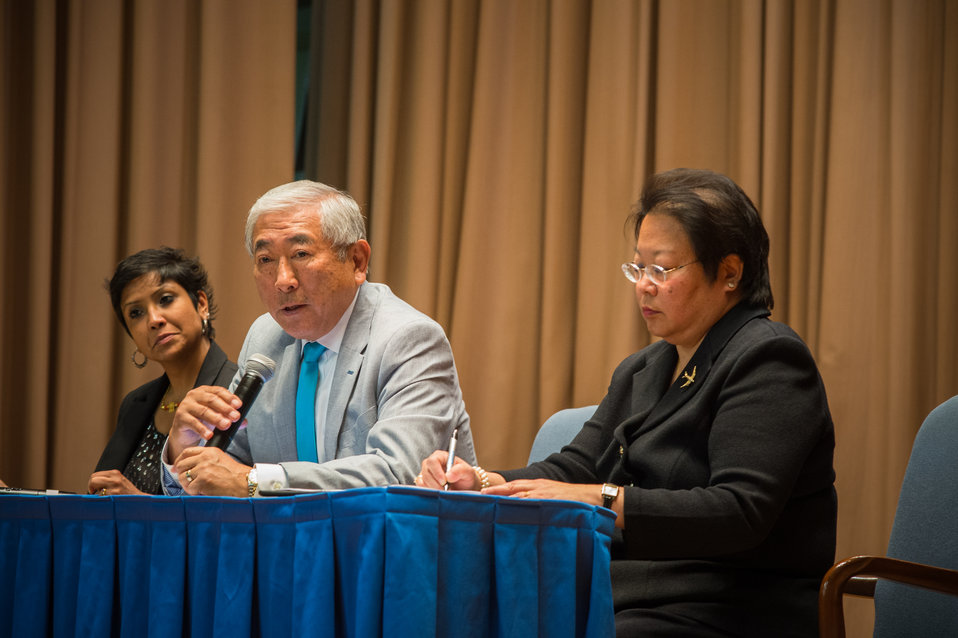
Floyd Mori, President and CEO, Asian Pacific American Institute for Congressional Studies (APAICS) participates in a panel discussion on civil rights and leadership U.S. Department of Agriculture (USDA) in Washington, D.C. on Thursday, May 22, 2014. The theme of the event was, “Diverse Leadership and Expanding Opportunity: Am Imperative for America.” On the panel with Mori are fellow panelists Suman Raghunathan, Executive Director, South Asian Americans Leading Together (SAALT) and Daphne Kwok, Commissioner and Former Chair, President’s Advisory Commission on Asian American and Pacific Islanders.